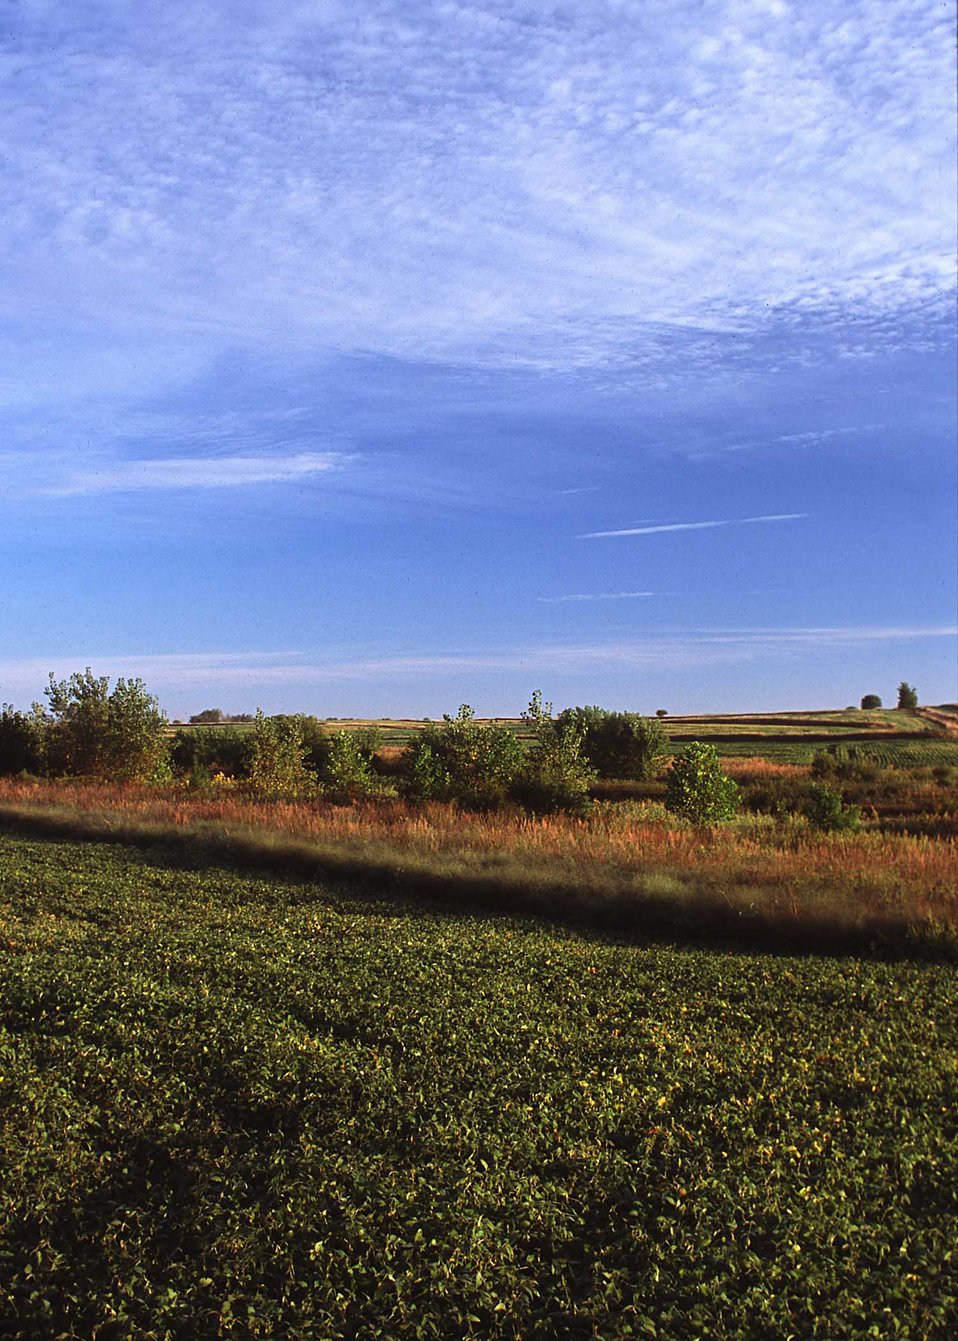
Riparian conservation buffer of grasses and trees offers wildlife habitat along Bear Creek in Story County, Iowa.